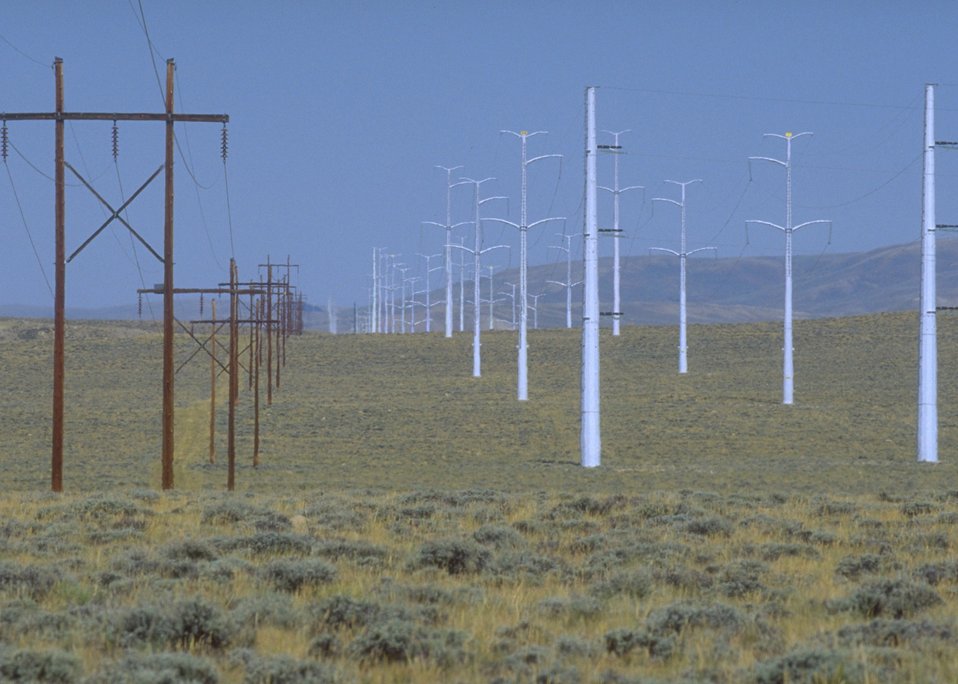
ROW's - Electric power lines along the Oregon Trail west of Casper, WY.